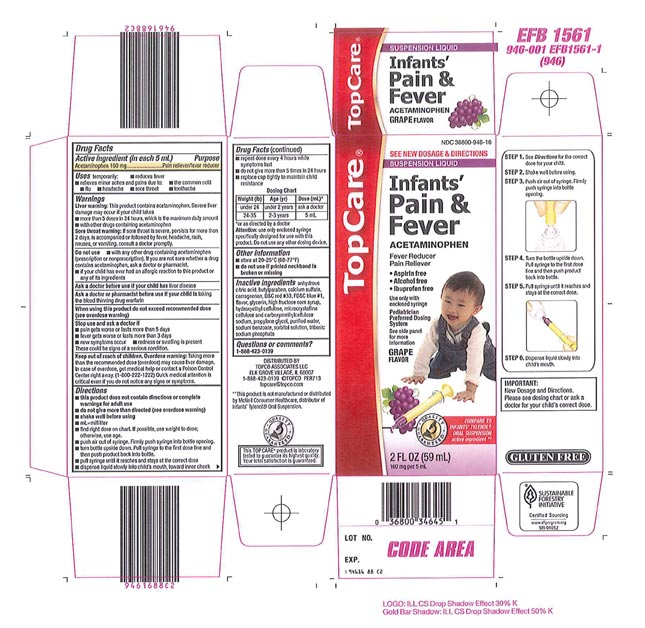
Recalled - Acetaminophen infant suspension liquid

November 1, 2013 – Product Recall – Perrigo Initiates Nationwide Voluntary Product Recall of Acetaminophen Infant Suspension Liquid, 160 Mg/5 Ml, Due to a Potential Defect with the Co-packaged Oral Syringe.